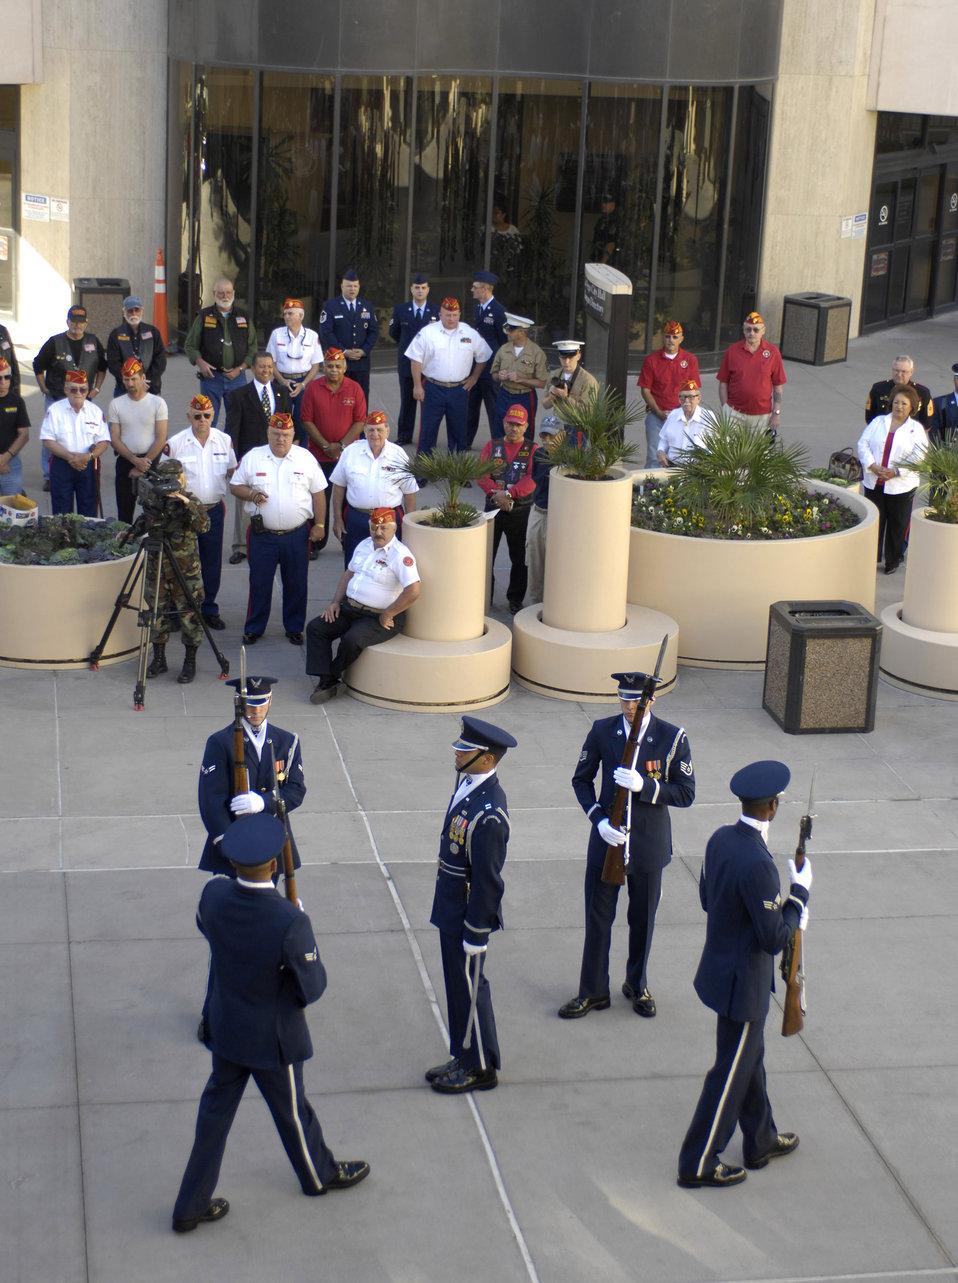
Aviation pioneers attend Heritage to Horizons ceremony

Members of the Air Force Honor Guard provide a rifle drill performance for a crowd outside of the city council chambers Nov. 8 in Las Vegas. Las Vegas Mayor Oscar Goodman held a special council meeting to proclaim Nov. 5 through 11 as Air Force Week in Las Vegas.